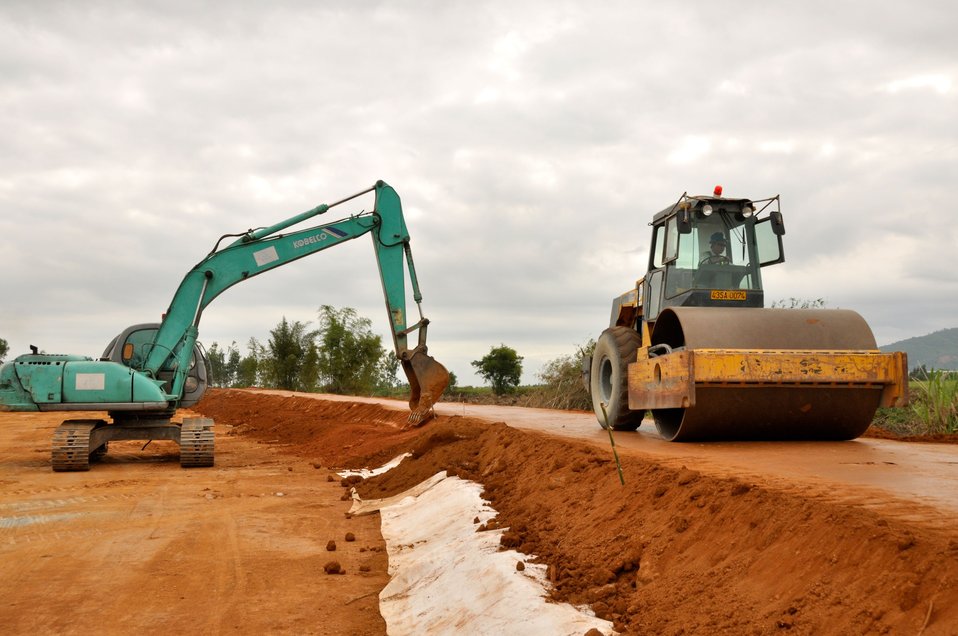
Danang Site Preparation for Environmental Remediation of Dioxin Contamination at Danang AirportRemediation Site Visit

Danang Airport, January 22, 2013